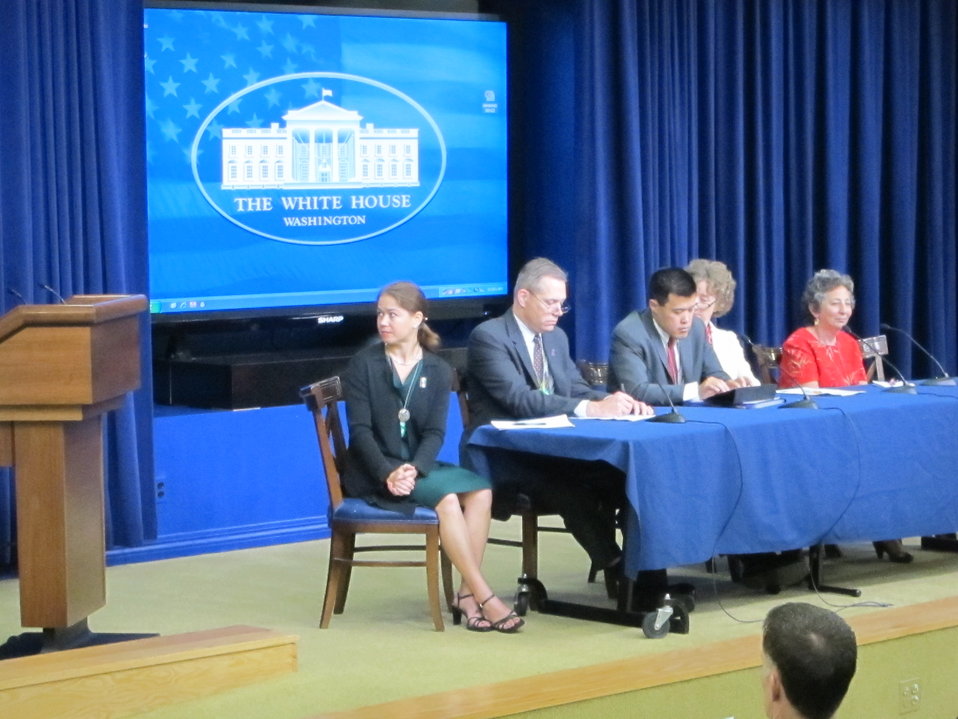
WH 2012 World Hepatitis Day Event